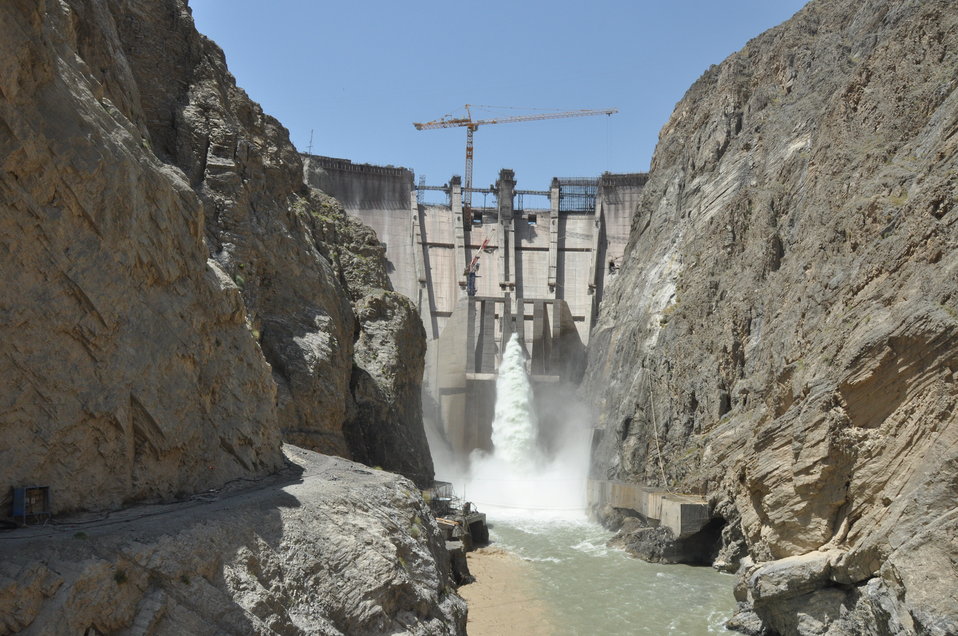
Gomal Zam